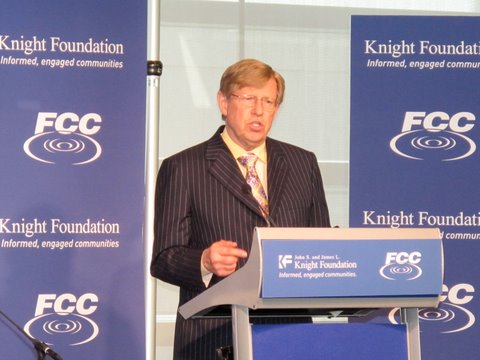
Knight Commission Co-Chair Theodore 'Ted' Olson addressed America's Digital Inclusion Summit at The Newseum, March 9, 2010